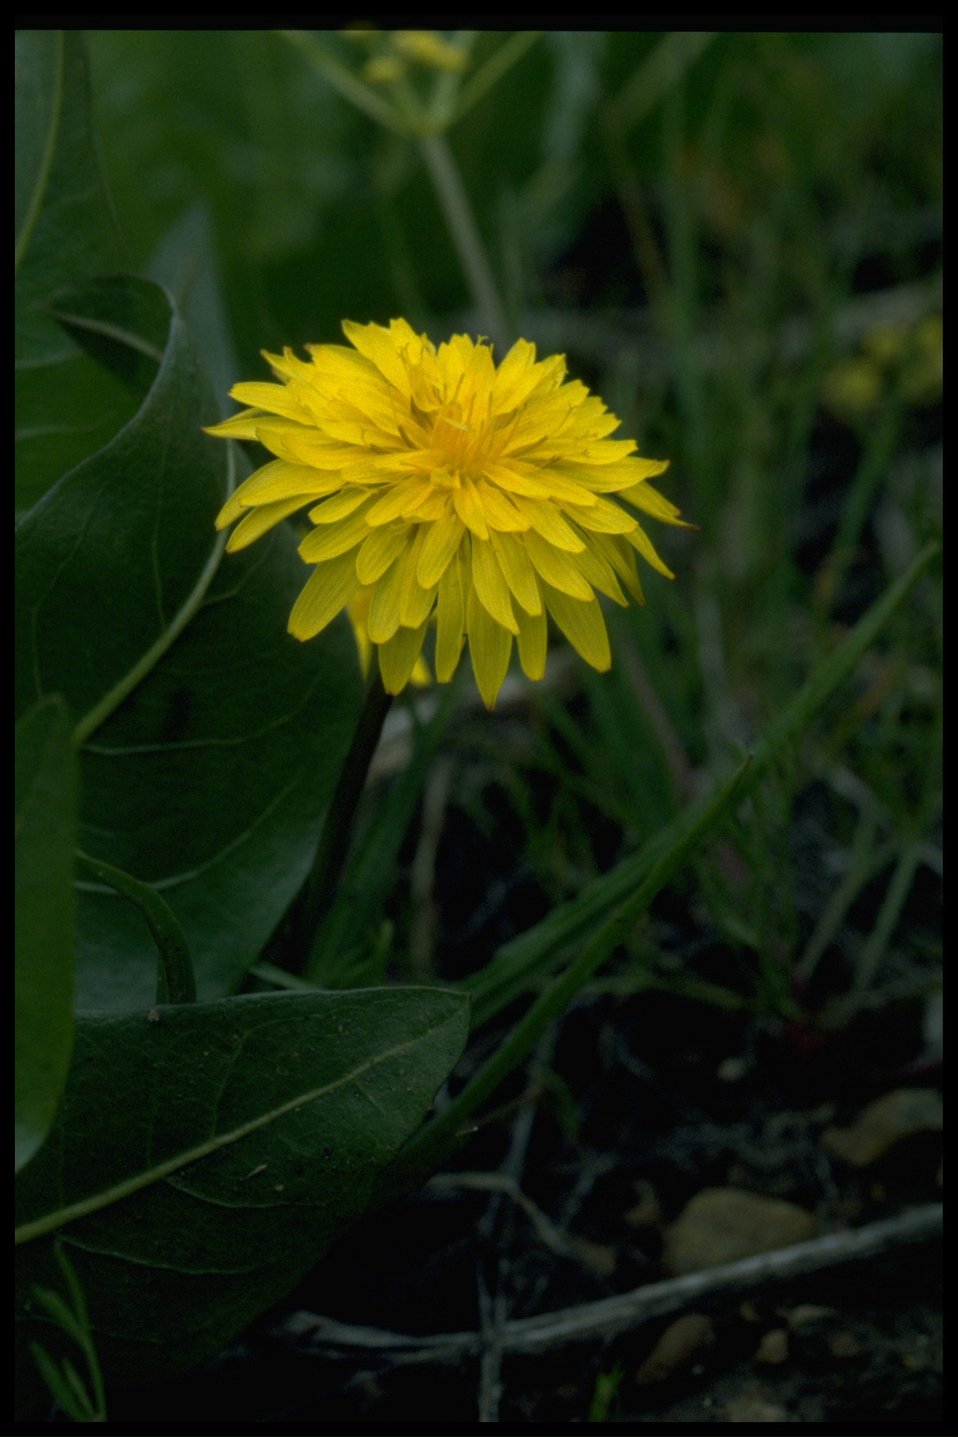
Closeup shot of prairie dandelion (Microseris troximoides).